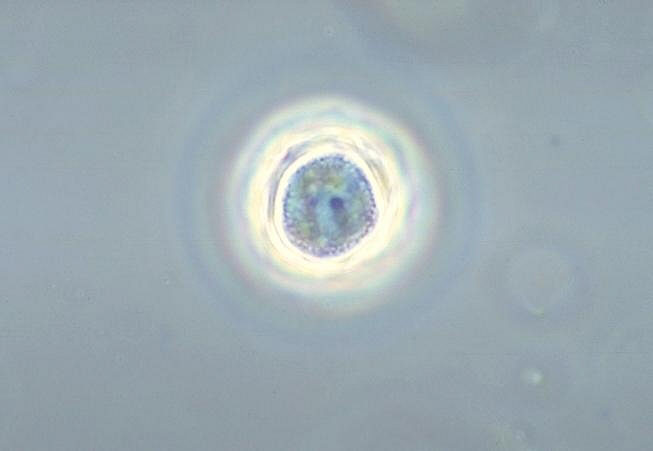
Acanthamoeba polyphaga cyst. Phase contrast.